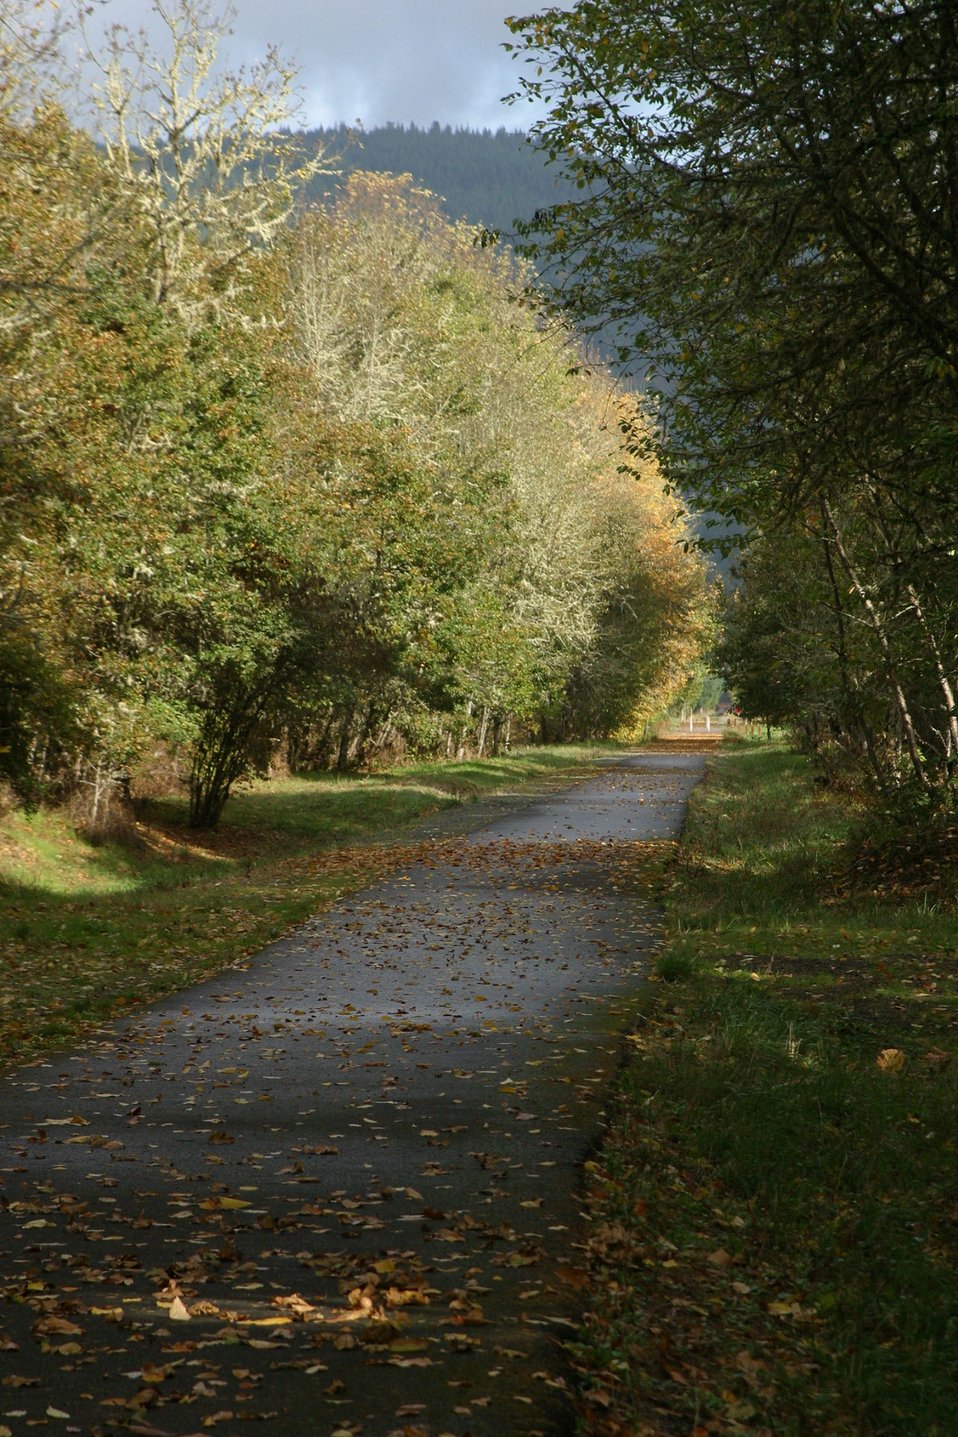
The the 15.6 mile Row River Trail trail not only attracts mountain bicyclists and horseback riders, but also road bicyclists and even a few in-line skaters.